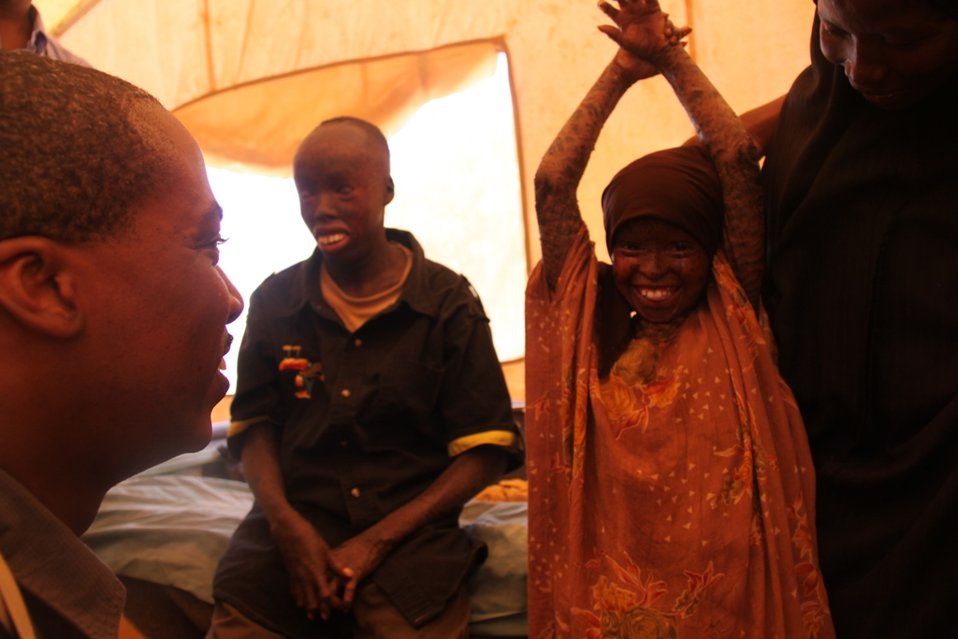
Deputy Assistant Secretary Brigety Visits a Hospital in Dadaab, Kenya

Deputy Assistant Secretary Reuben Brigety entertains a child and a young man, both with a rare skin disease, while in Dadaab, Kenya on July 13, 2011.